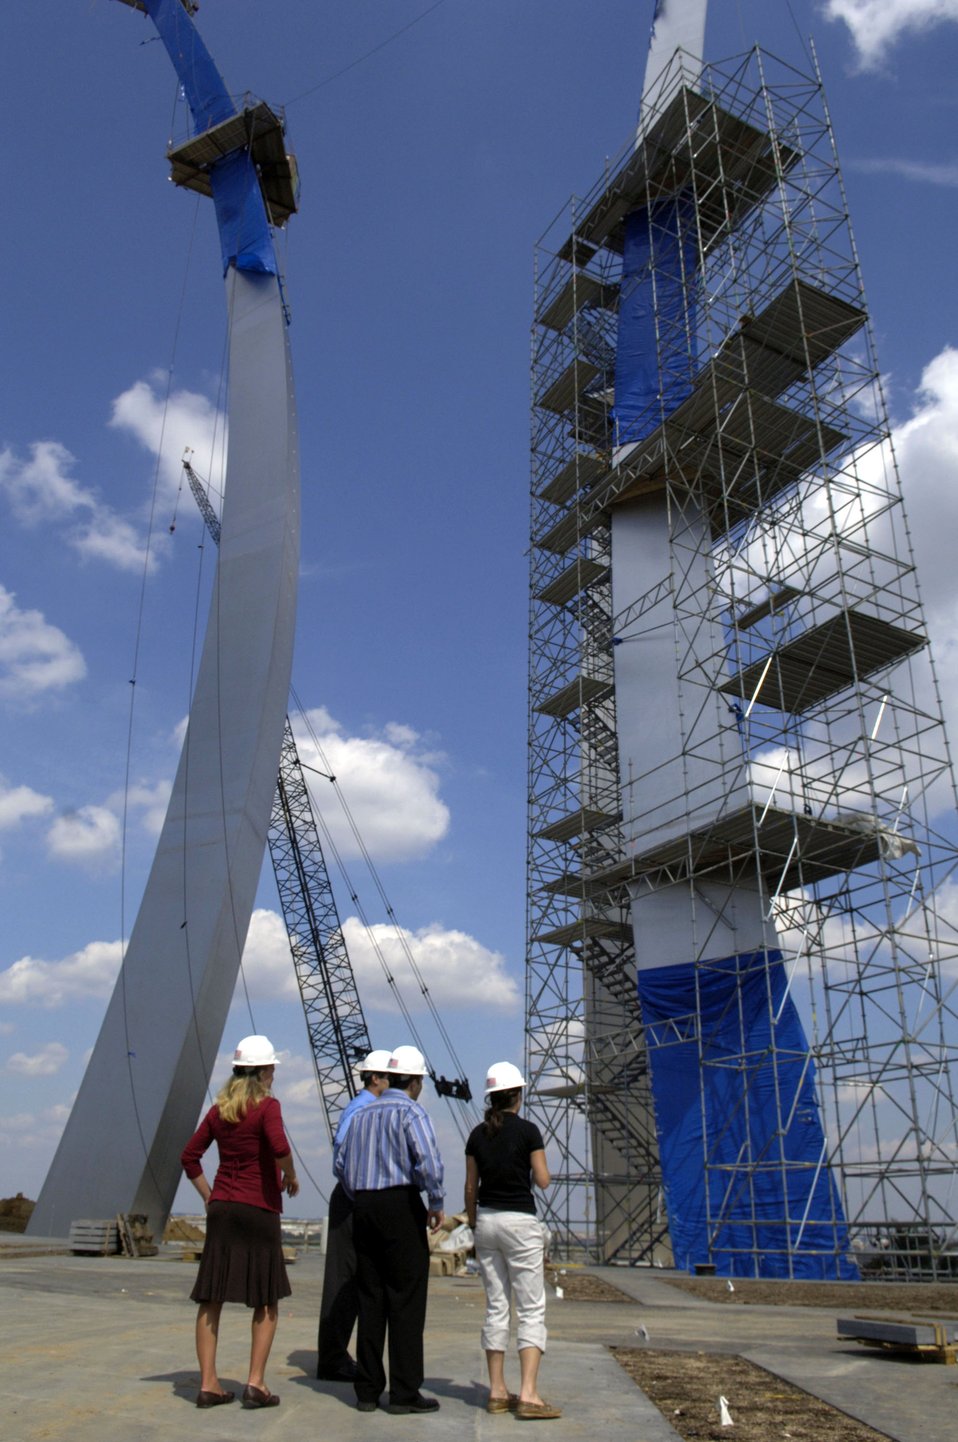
'Treasure Hunters' meet Air Force leaders

Team Air Force from the